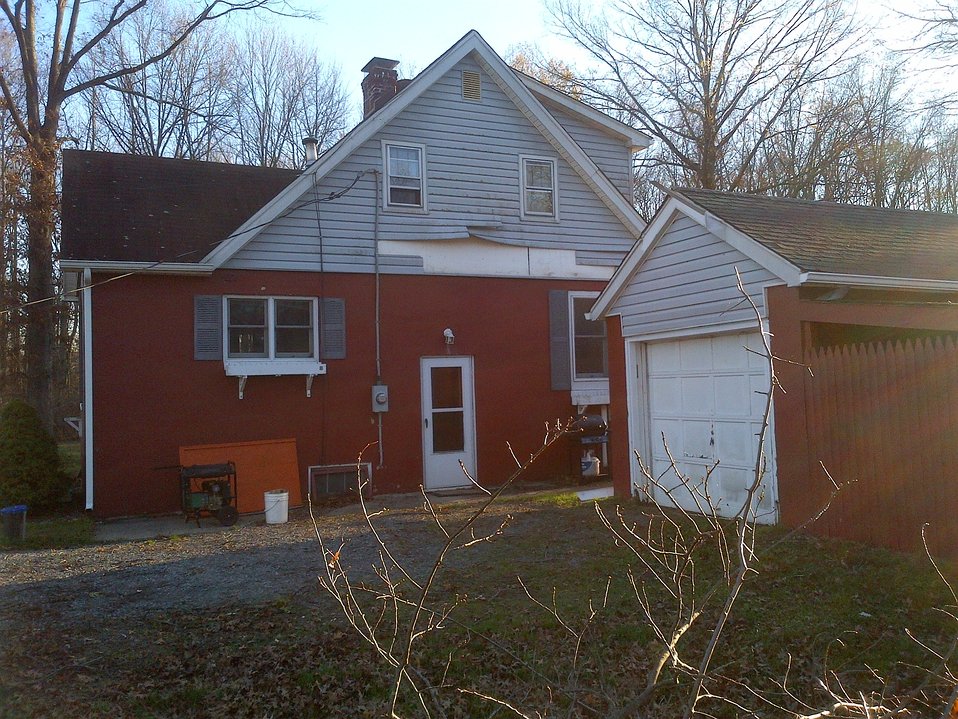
Hurricane Sandy caused damage at Great Swamp National Wildlife Refuge (NJ)

Storm damage to siding of refuge housing